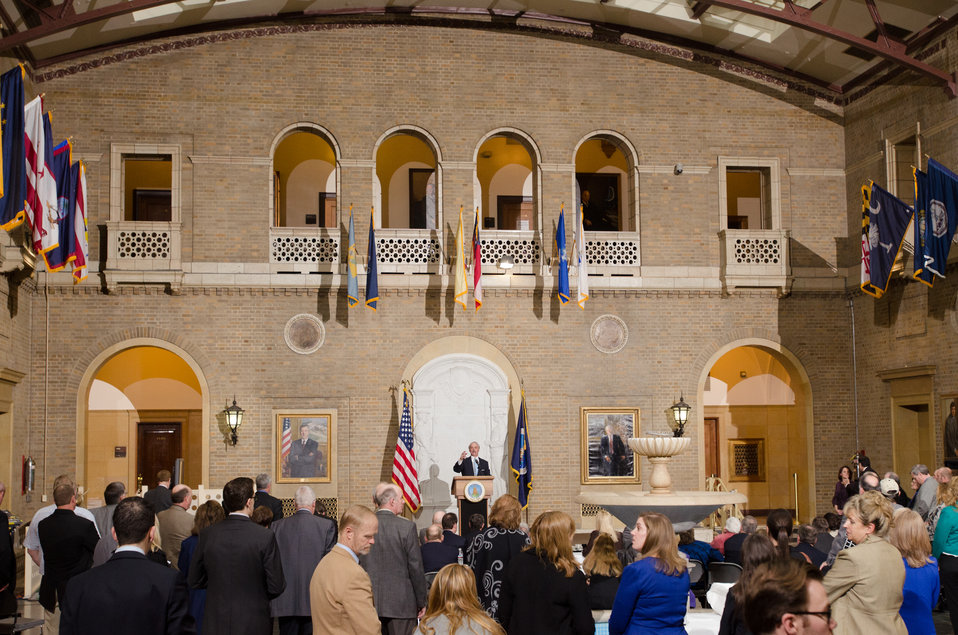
Keynote speaker and former National Football League Pittsburgh Steelers halfback Robert Patrick 'Rocky' Bleier spoke about the importance of milk in his childhood growth, and recounted some of his historic game-winning football play, during a luncheon with dairy producers, Dairy Management, Inc., (DMI) and other stakeholders from the dairy producers industry, at the Whitten Building Patio in Washington, D.C. on Tuesday, Feb. 26, 2013.